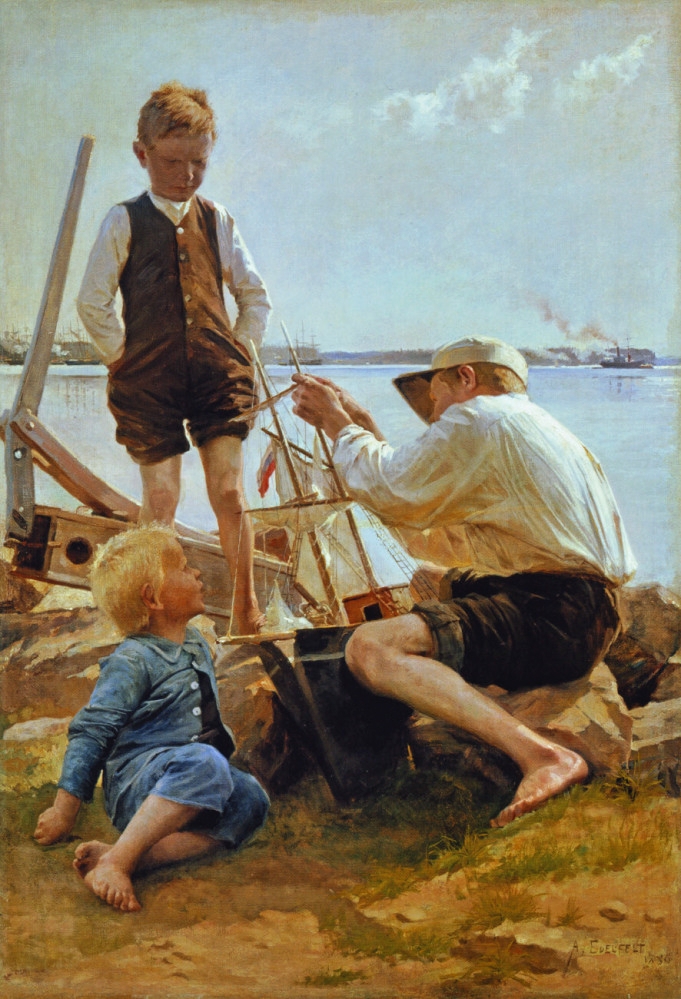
Albert Edelfelt Shipbuilders 1886